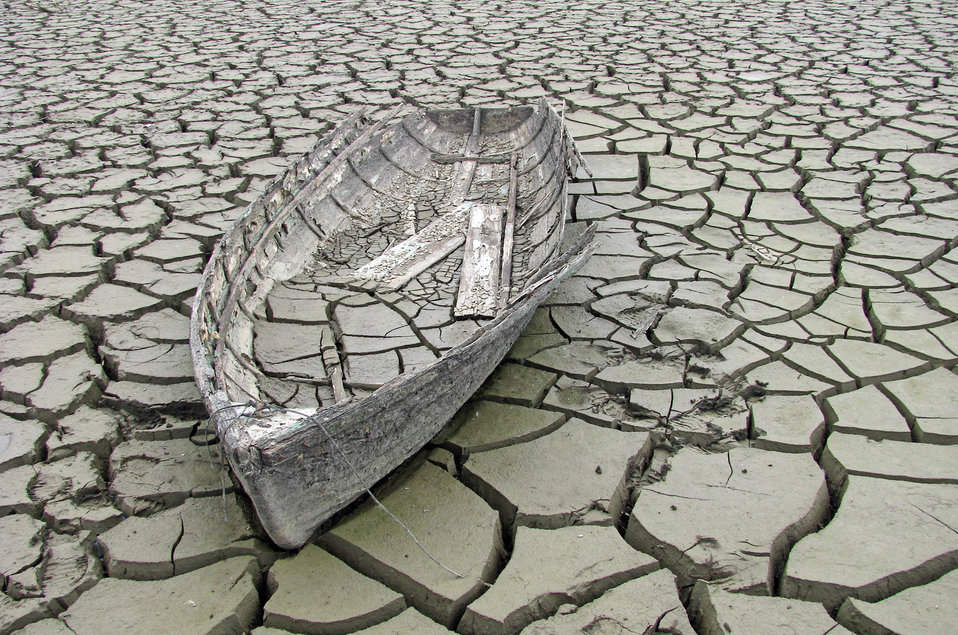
Old ship - macro.